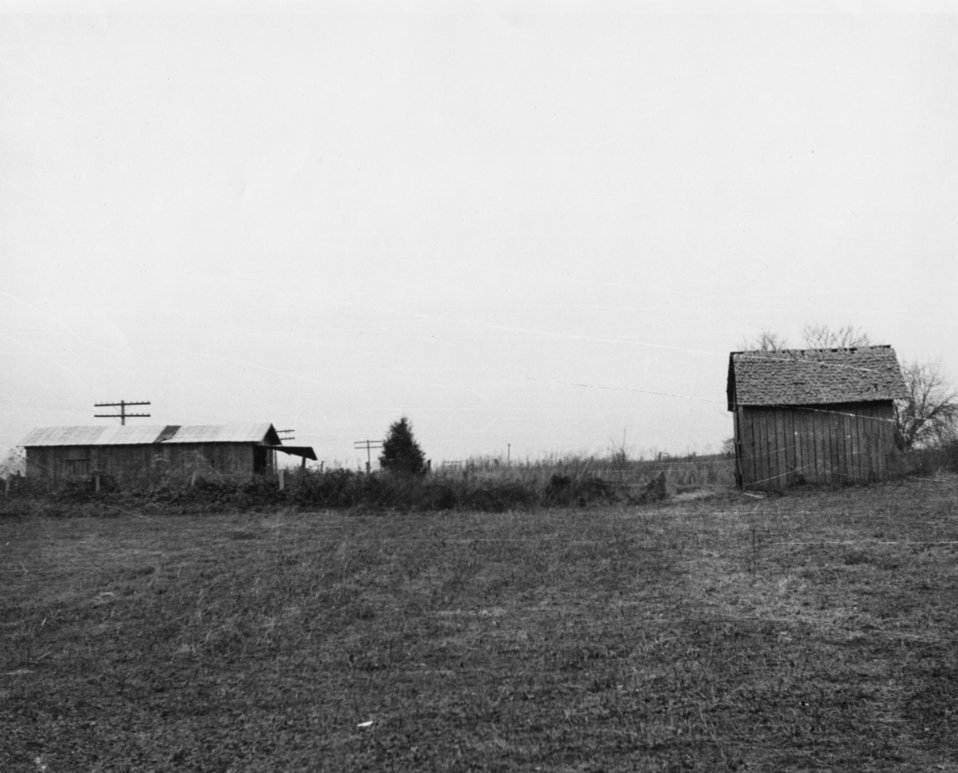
Early settlers at Oak Ridge